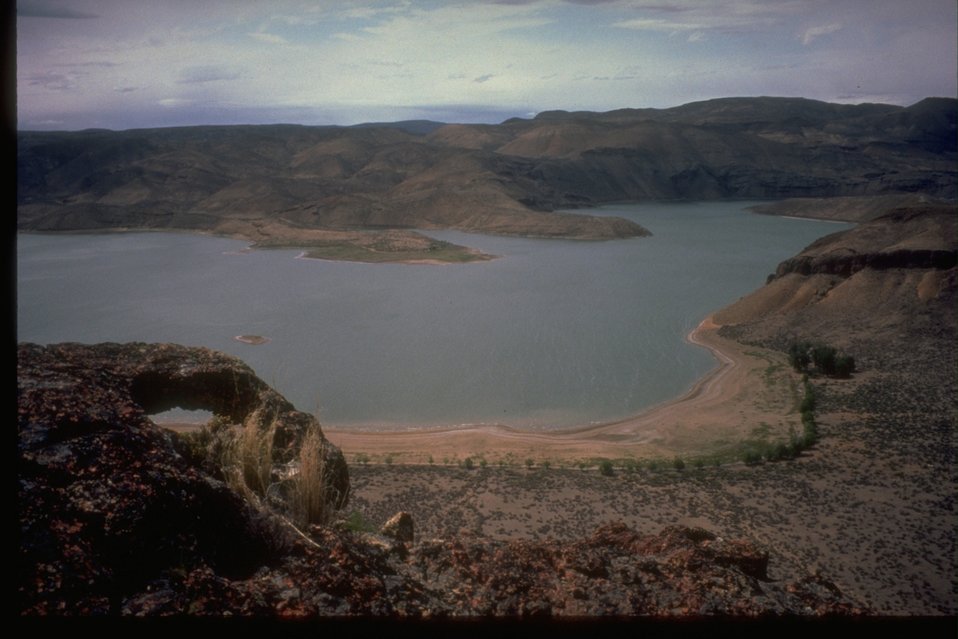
Leslie Gulch Series: looking over lake.